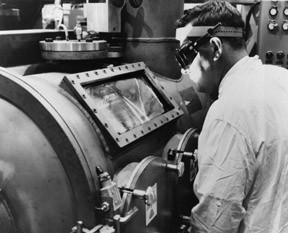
Richland, Washington...Electron beam welding, developed primarily for fabricating nuclear fuel elements, has been adapted for use in all areas of industrial welding. c. 1966